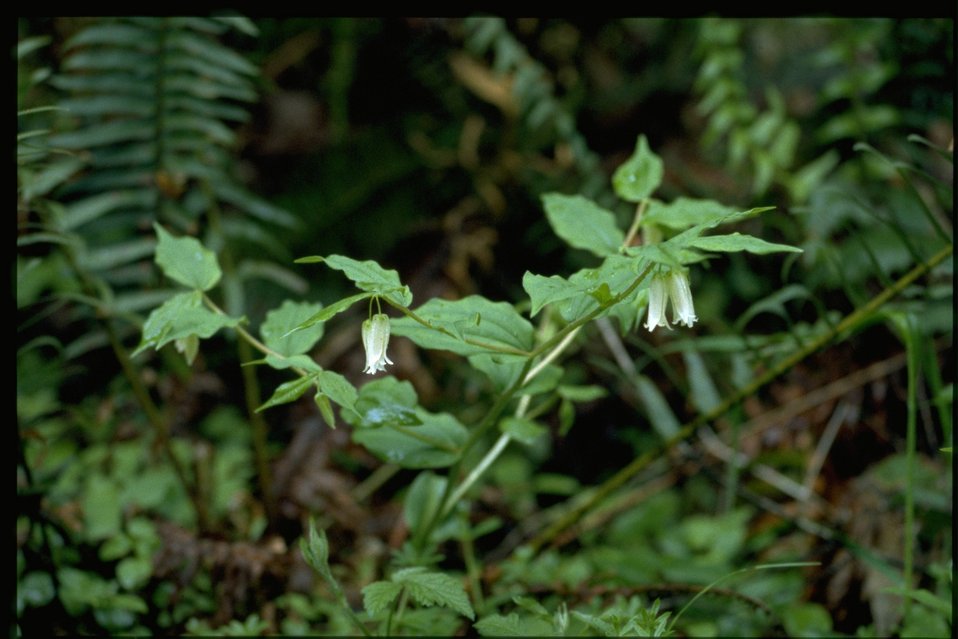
Medium shot of Disporum smithii.